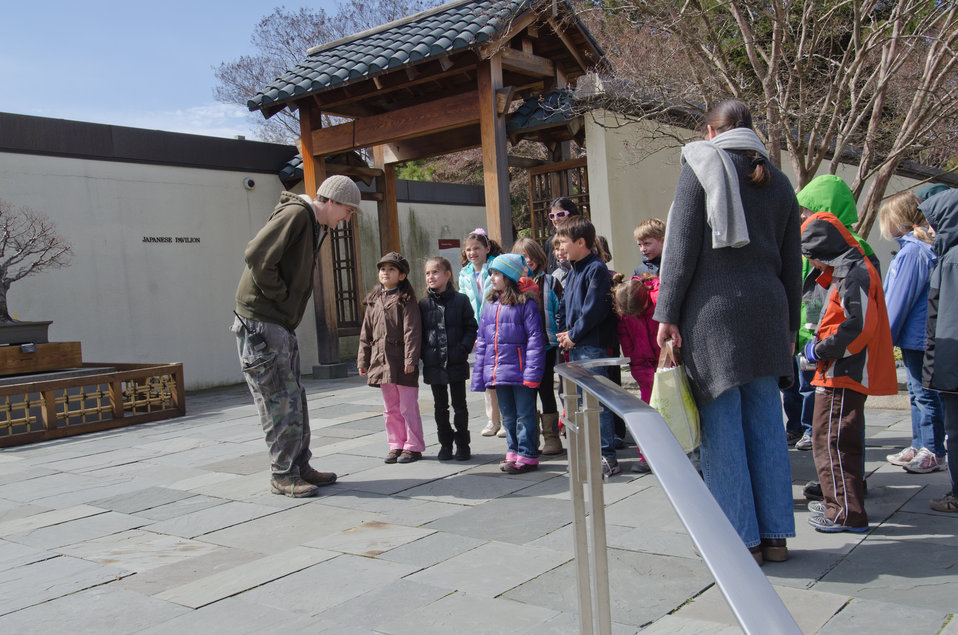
After the class bowed and thanked him in Japanese, Assistant Curator Aarin Packard (green fleece jacket and knit cap) also bowed and replied in Japanese his thanks and farewell to second grade students from Sidwell Friends School, Washington, DC, who visited the National Bonsai & Penjing Museum, in the U.S. Department of Agriculture, Agriculture Research Service's National Arboretum in Washington, DC, on March 29, 2011. Mr. Packard told the children of the many special needs of caring for bonsai trees, and that the trees are simply regular trees, trained and controlled to grow in a small form. Packard also stated that the trees may be small but they are often hundreds of years old. Before the tour, he did some research and found that one of the bonsai trees was donated by Princess Chichibu of Japan, a 1928 alum of Sidwell Friends School.